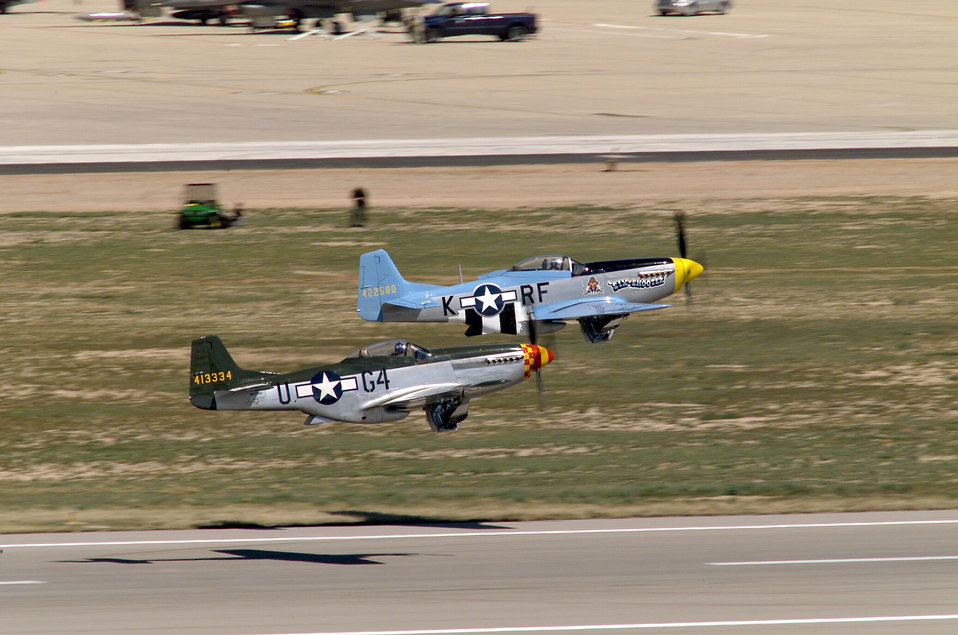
P-51 Mustangs

DAVIS-MONTHAN AIR FORCE BASE, Ariz. (AFPN) - Two P-51 Mustangs take off in formation during the Heritage Flight Conference held here recently. The Heritage Flight Conference is designed to train and certify the Air Combat Command A-10 Thunderbolt II, F-15 Eagle and F-16 demonstration pilots to fly in formation with historical aircraft.